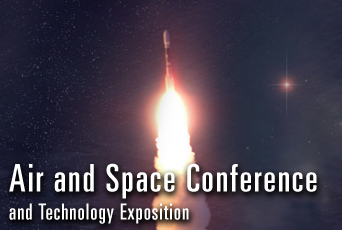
AFA conference

Air Force Association's annual Air & Space Conference and Technology Exposition